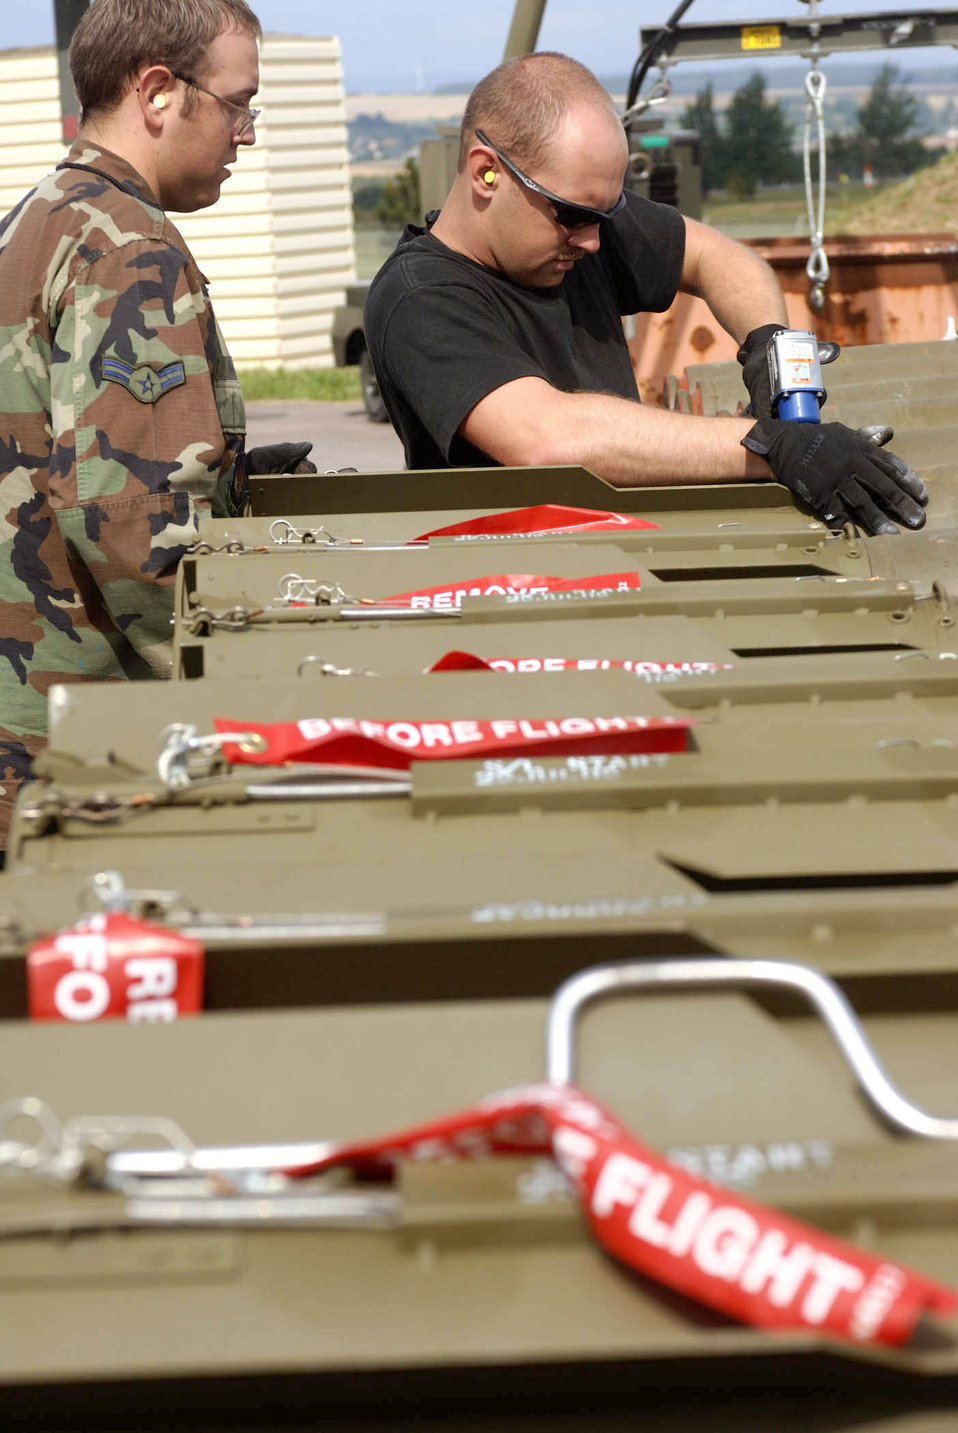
To build a better bomb

SPANGDAHLEM AIR BASE, Germany -- Airman 1st Class Jeremiah Phelps holds a Mark-82 bomb fin in place while it is secured by Senior Airman Mike Miller. They are munitions crewmembers with the 52nd Equipment Maintenance Squadron.